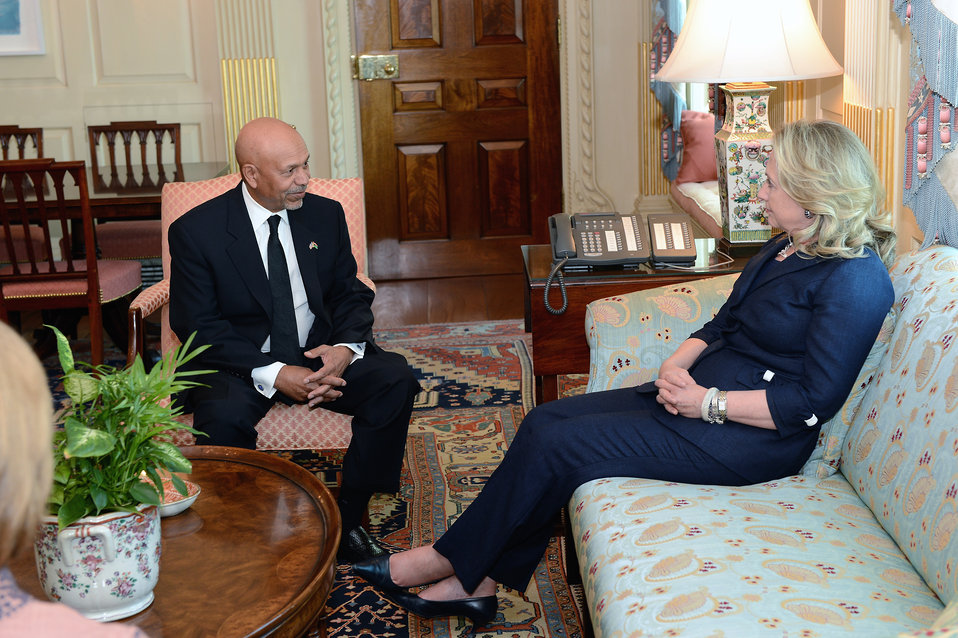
Secretary Clinton Meets With Libya's Ambassador to the U.S. Ali Suleiman Aujali

U.S. Secretary of State Hillary Rodham Clinton meets with Libya's Ambassador to the U.S. Ali Suleiman Aujali at the U.S. Department of State in Washington, D.C. on September 12, 2012.